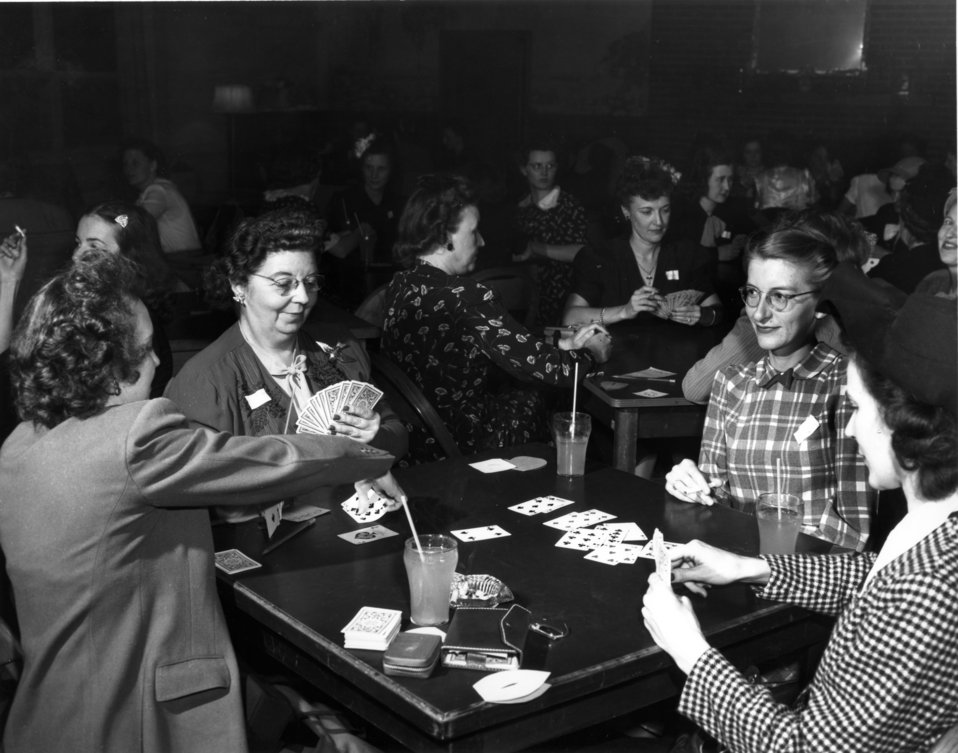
Recreation at Oak Ridge